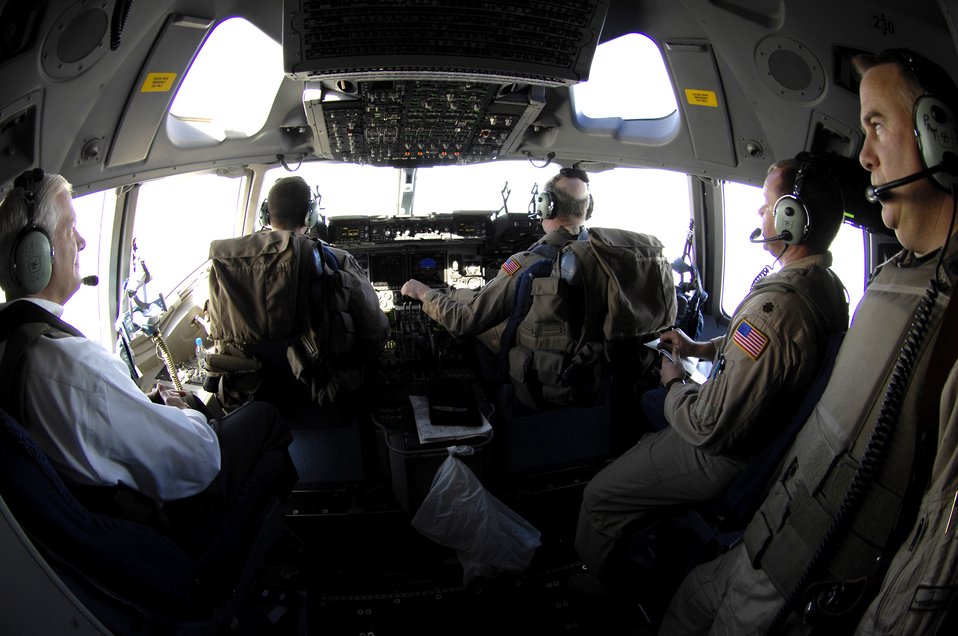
Secretary Gates sends message to all servicemembers

Secretary of Defense Robert M. Gates flies aboard a C-17 Globemaster III.